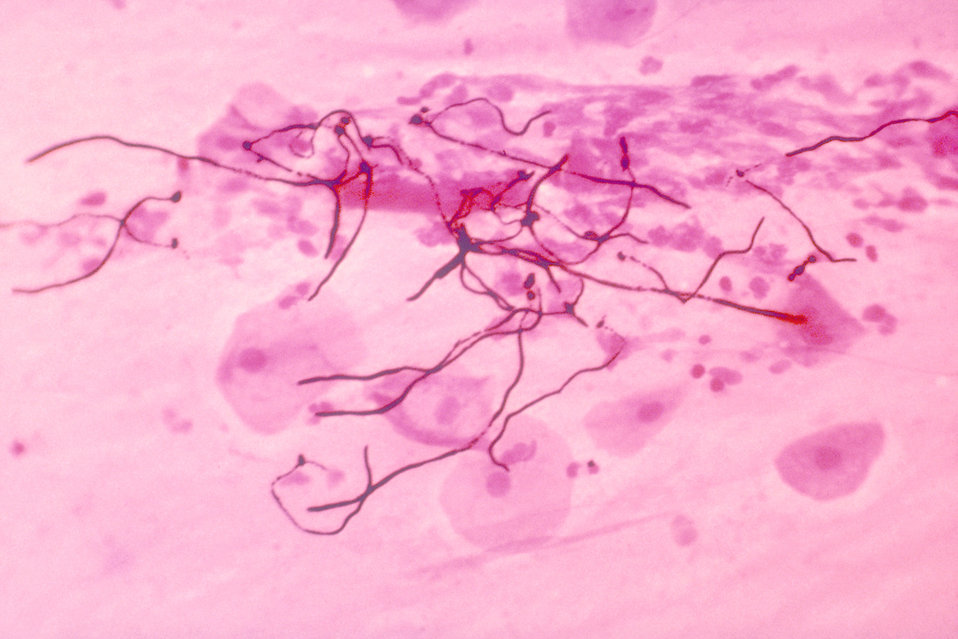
This Gram-stained micrograph from a patient with pulmonary candidiasis reveals the presence of the fungus C. albicans.